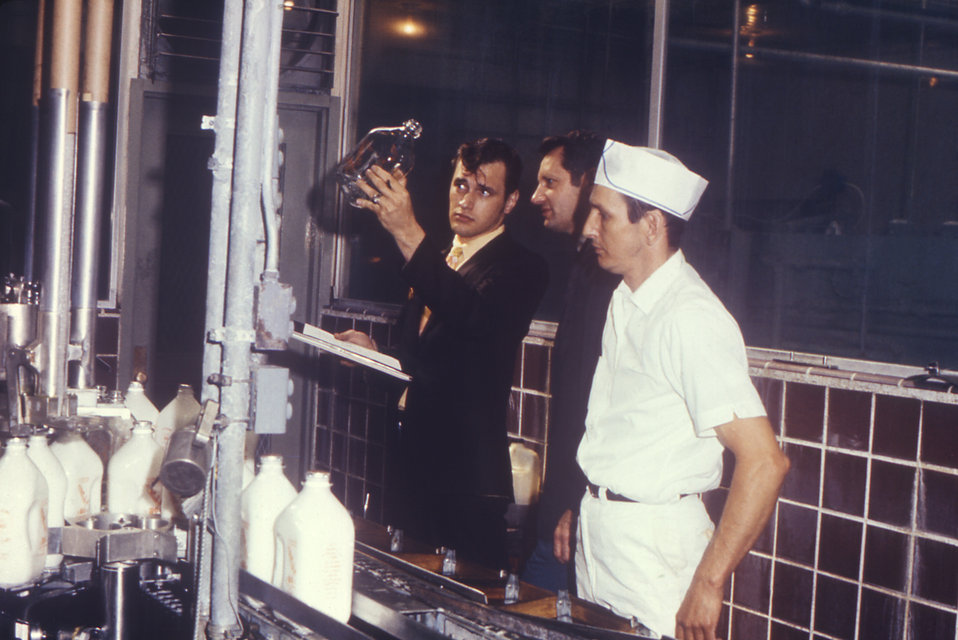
In this 1970 photograph, two CDC sanitarians Frank Bran (Middle), and an unidentified official (Lt), were inspecting the milk-production machinery, during a tour of a dairy farm being conducted by one of the facility's technicians. At this point in the tour, the men were inspecting the bottling process.